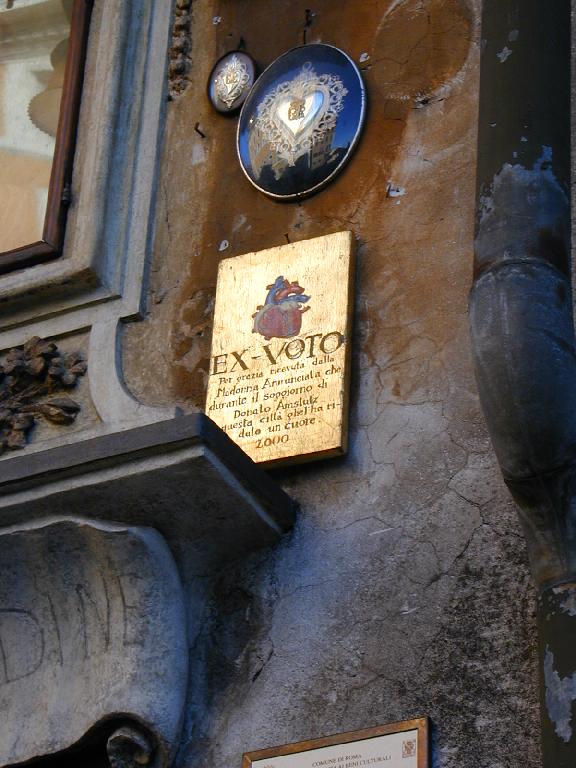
010101 11 madonna alle bottehe oscure ex voto 1